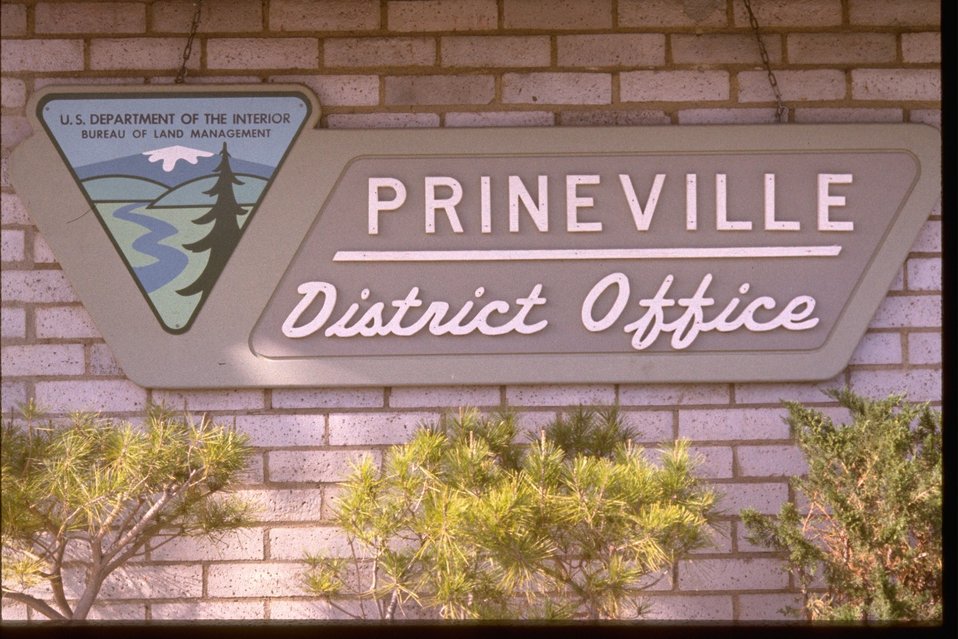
BLM sign at the Prineville District Office.